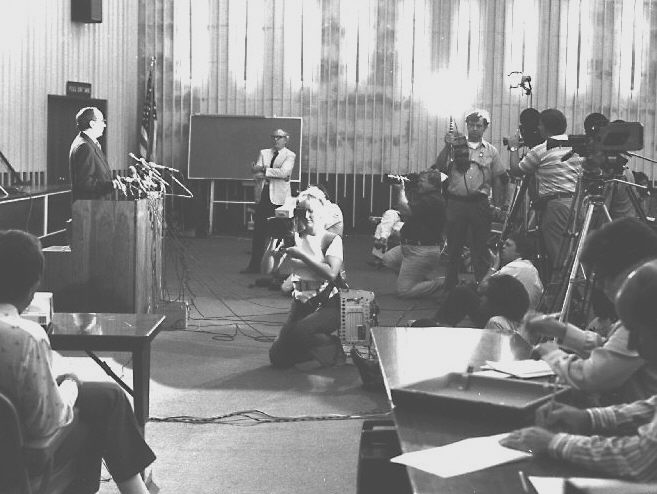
CDC Director, Dr. David Sencer, is addressing media personnel, 1976.